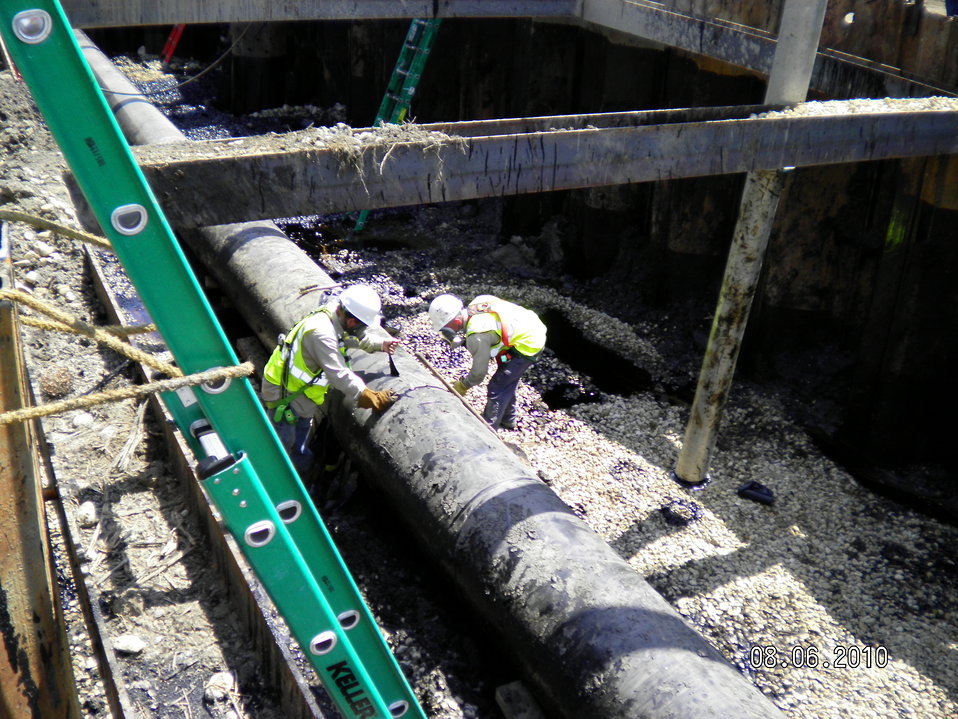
Wide - Enbridge Oil Spill pipeline removal

August 6, 2010 - Technicians in personal protective equipment prepare pipe before cutting and removing the section from the Enbridge pipeline oil spill site near Marshall, Michigan.